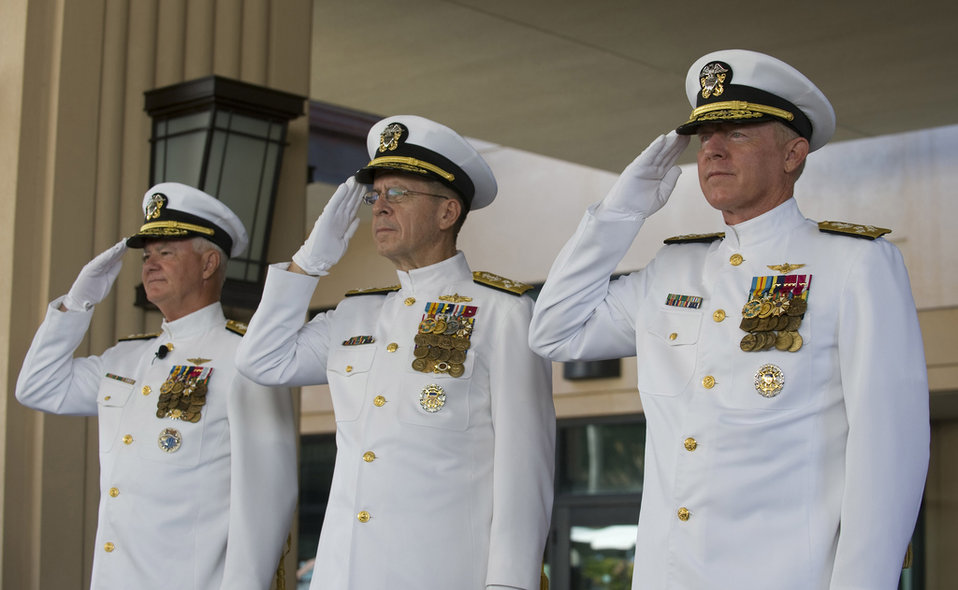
PACOM change of command

Adm. Robert F. Willard (from right), incoming commander of U.S. Pacific Command; Adm. Mike Mullen, chairman of the Joint Chiefs of Staff; and Adm. Timothy J. Keating, outgoing commander of U.S. PaCom, render honors during the singing of the national anthem at the U.S. PaCom change of command ceremony Oct. 19, 2009, at Camp H.M. Smith, Hawaii. Admiral Willard, former U.S. Pacific Fleet commander, assumed command of U.S. PaCom from Admiral Keating during the ceremony.